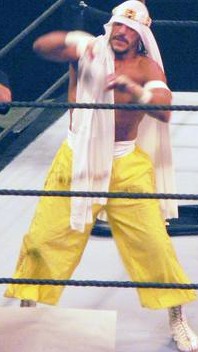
Sabu at a Smackdown!/ECW live event in 2006 at Cincinnati Ohio